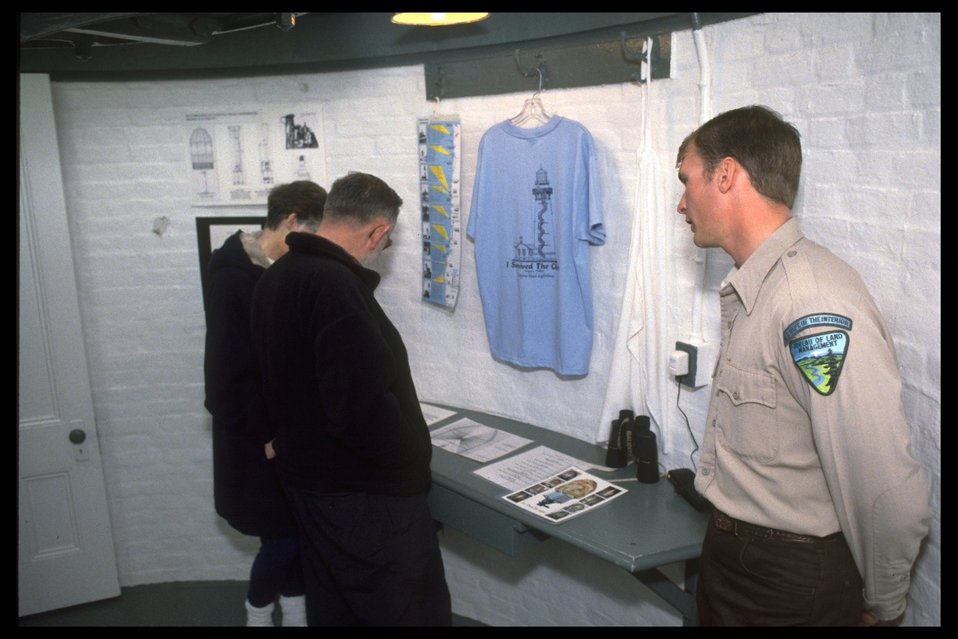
Inside of Yaquina Head Lighthouse.